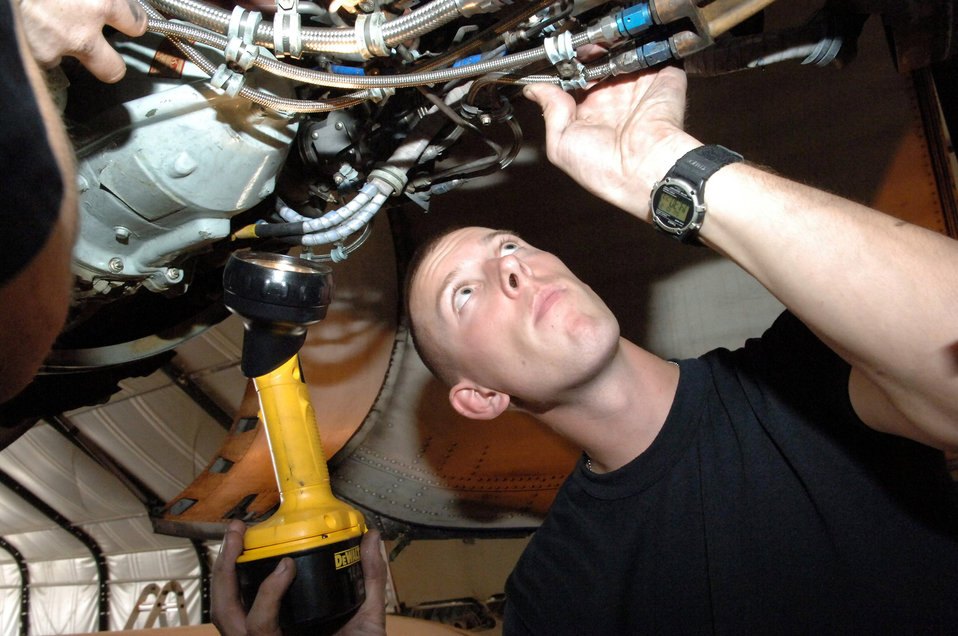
Operation Enduring Freedom

BAGRAM AIR BASE, Afghanistan -- Senior Airman Shaun Rancourt assists with replacing engine gaskets during a recent A-10 Thunderbolt II phase inspection here. In September, A-10s here flew 380 direct close-air support sorties supporting Operation Enduring Freedom. Airman Rancourt is a crew chief with the 455th Expeditionary Aircraft Maintenance Squadron and is deployed from Davis-Monthan Air Force Base, Ariz.